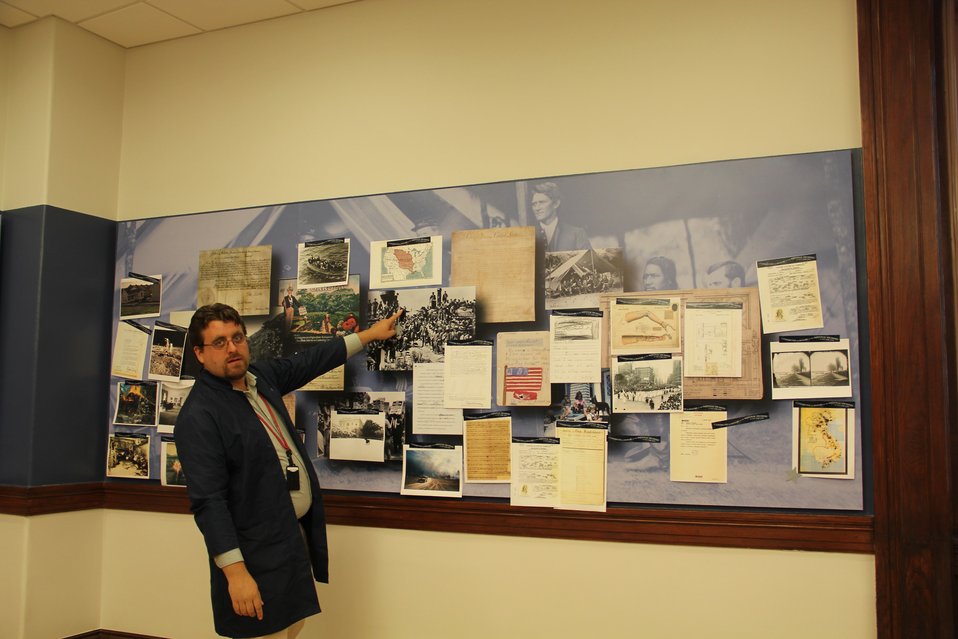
Chris Zarr, Education Specalist, in the Learning Center, National Archives at New York City. Here he is standing next to a wall completed by students who connected some of their favorite records using magnets to our mural.; Location: National Archives at New York City, New York, New York; Photographer: